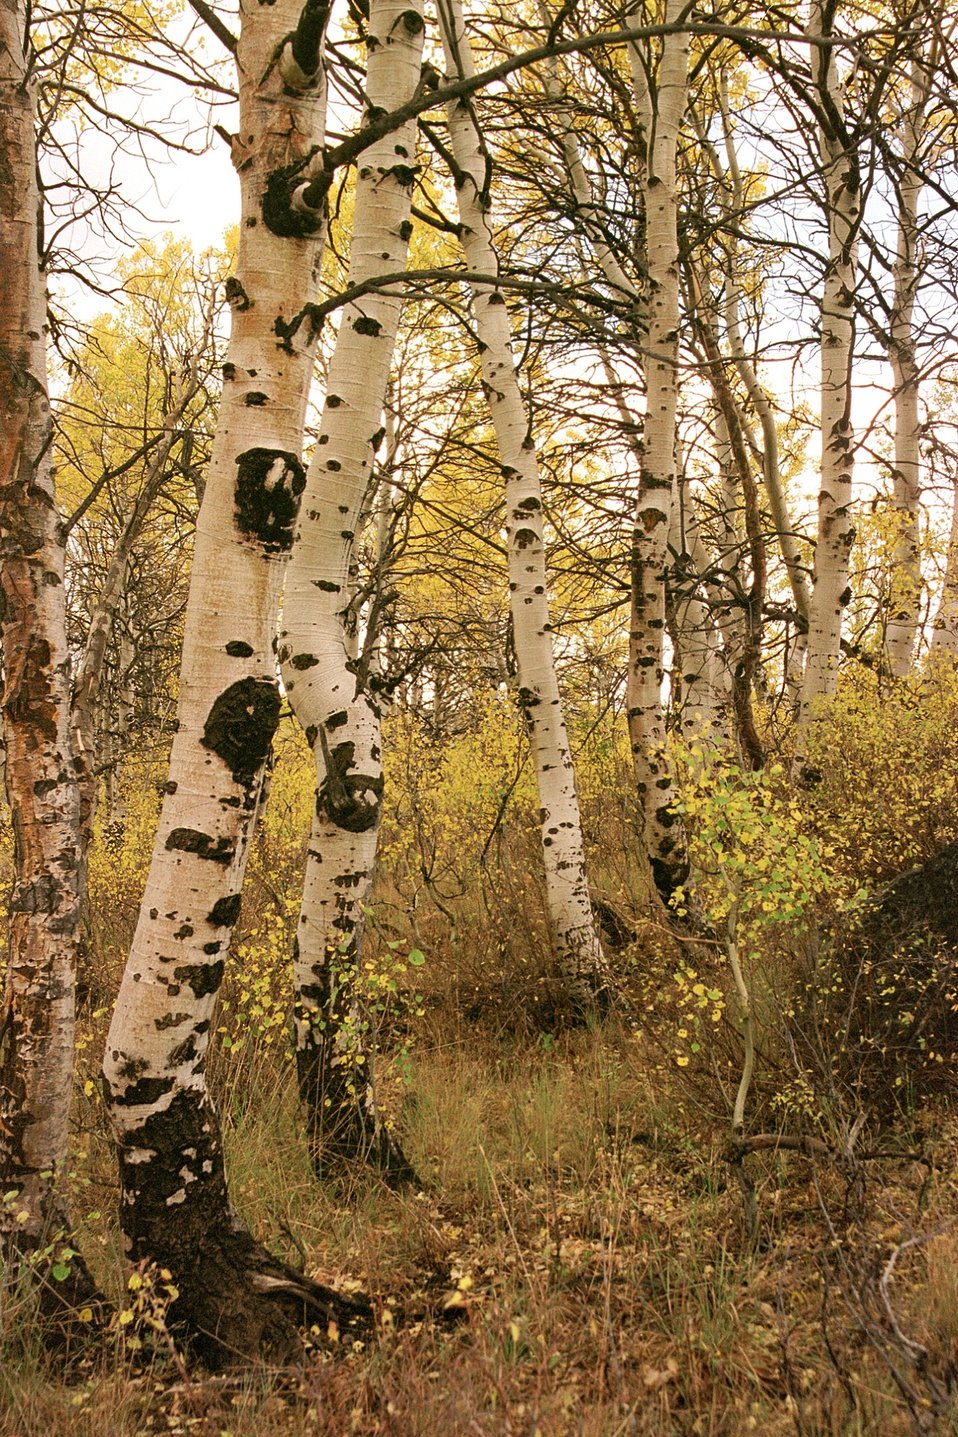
Aspens at Fish Lake, Steen's Mountain.